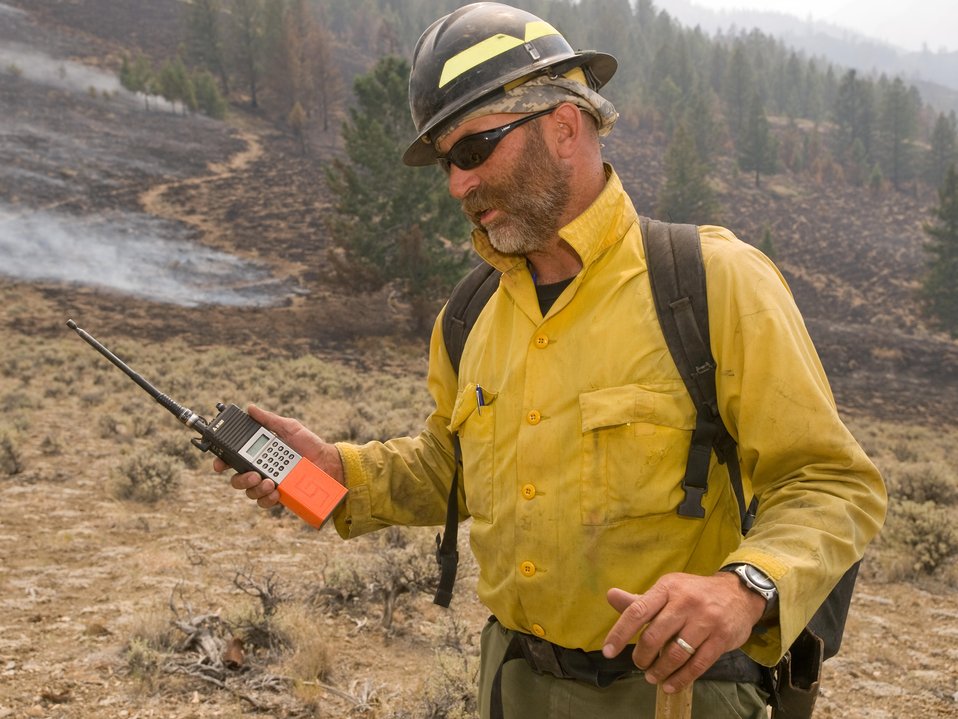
Firefighter works on the Lodgepole Fire. The Lodgepole Fire in the Salmon-Challis National Forest near Challis, ID began on Jul. 20, 2013 by lightning has consumed approximately 13,700 acres and is approximately 15% contained.